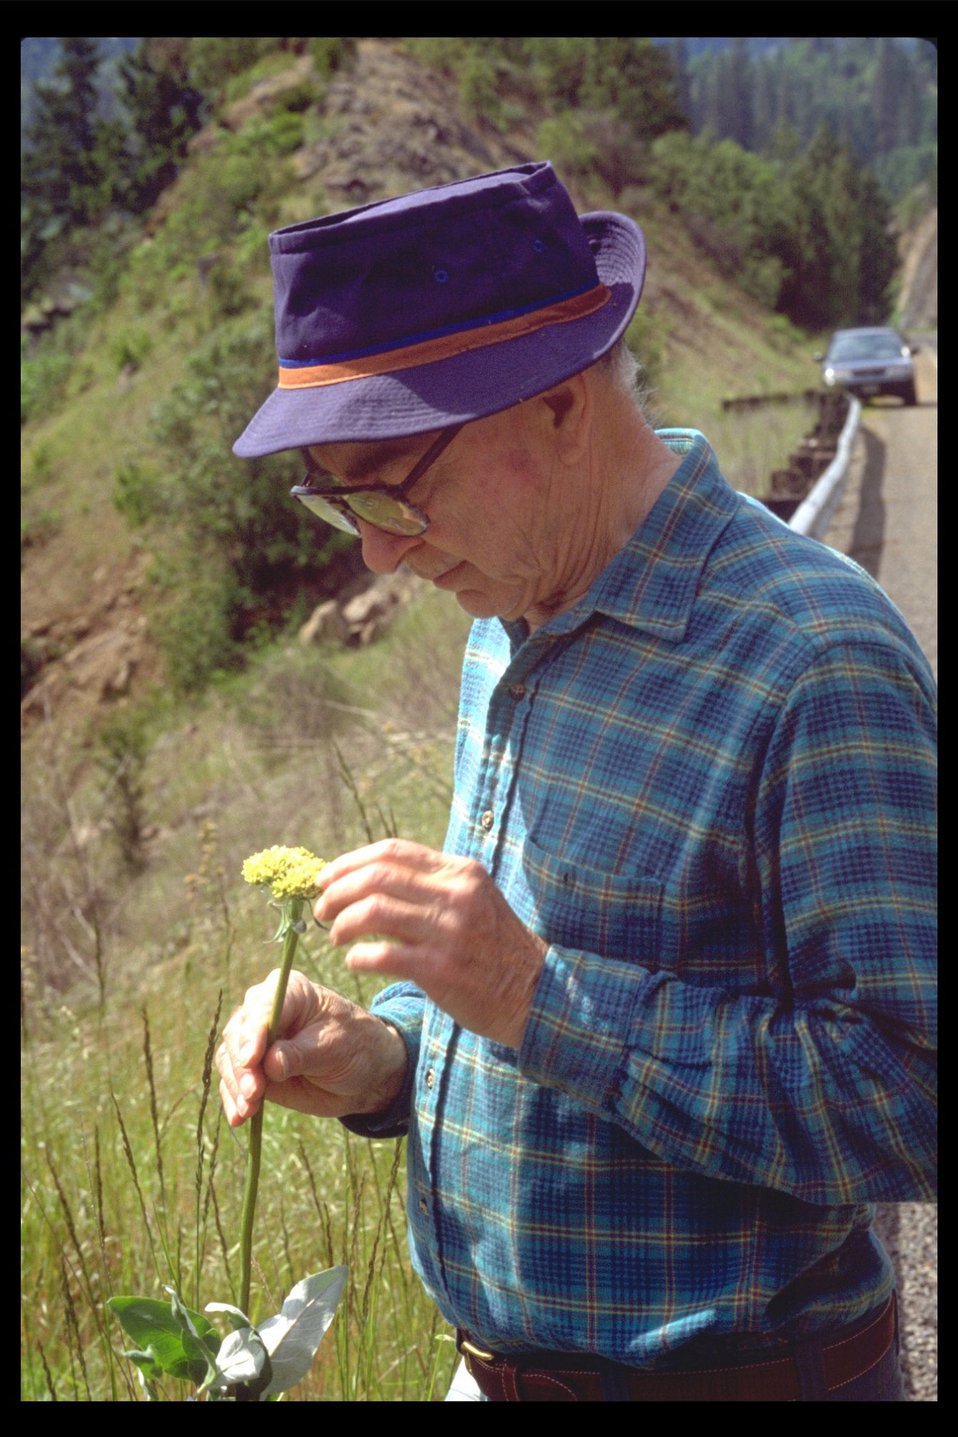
Miles Hill examines Arrowleaf Buckwheat (Eriognum compositum) near Lost Creek Lake.